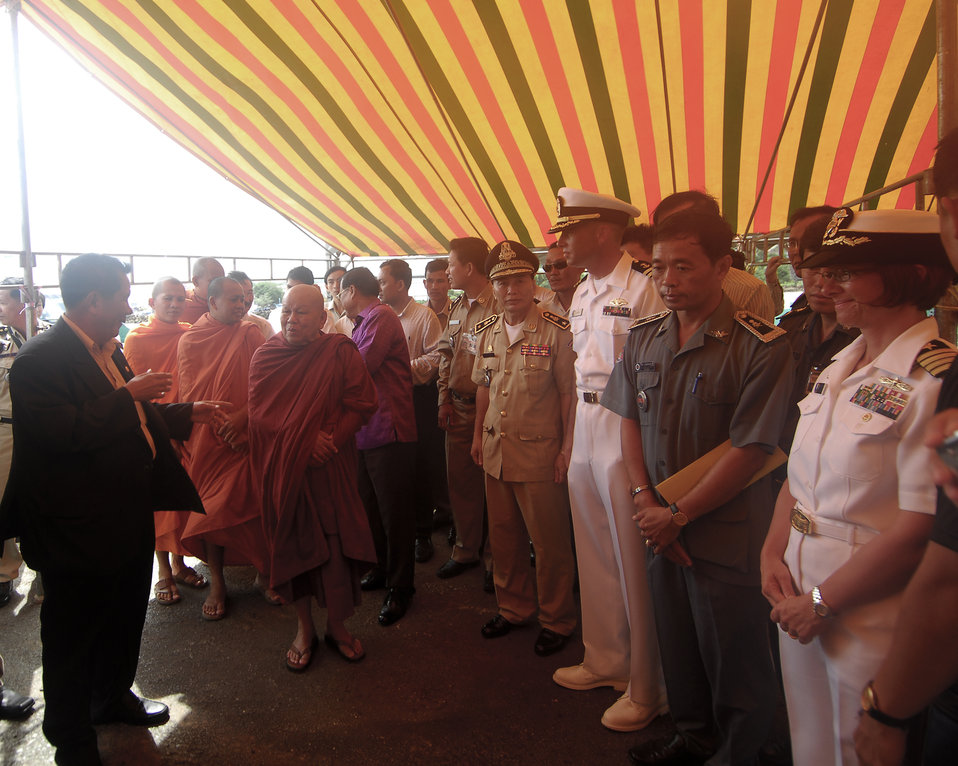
Cambodian Ministry of Culture Director, Capt. Franchetti, and First Mate Matthew Bush Greet Buddhist Monks

Cambodian Ministry of Culture Director Khim Sarith and Pacific Partnership 2010 Commander Capt Lisa M. Franchetti, along with Military Sealift Command hospital ship USNS Mercy (T-AH 19) First Mate Matthew Bush and Cambodian military officials, greet a group of Buddhist monks during a ceremony in which Cambodian artifacts were repatriated to the Cambodian government in Sihanoukville, Cambodia, on June 17, 2010.